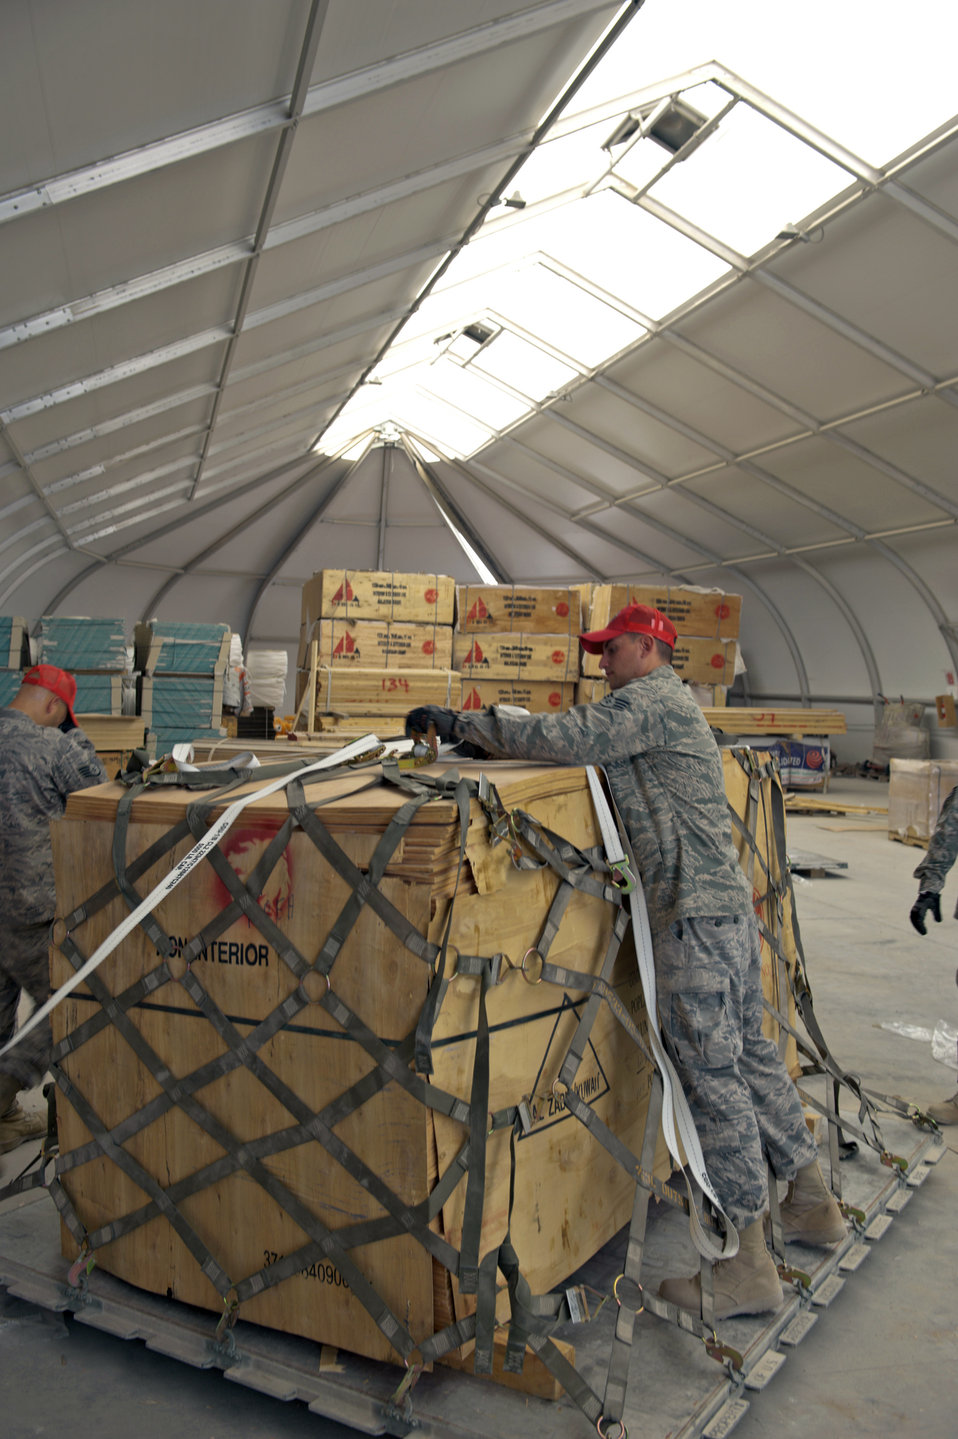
Airmen build bare bases 1 pallet at a time

Senior Airman Ryan McGraw secures a pallet of wood to be palletized and shipped Sept. 15, 2009, at an air base in Southwest Asia. Airman McGraw is a 1st Expeditionary RED HORSE Group structural journeyman. He along with fellow servicemembers of the logistics and pallet build-up team, support all RED HORSE operations downrange by obtaining and shipping required equipment for mission success. Airman McGraw is deployed from Dyess Air Force Base, Texas.